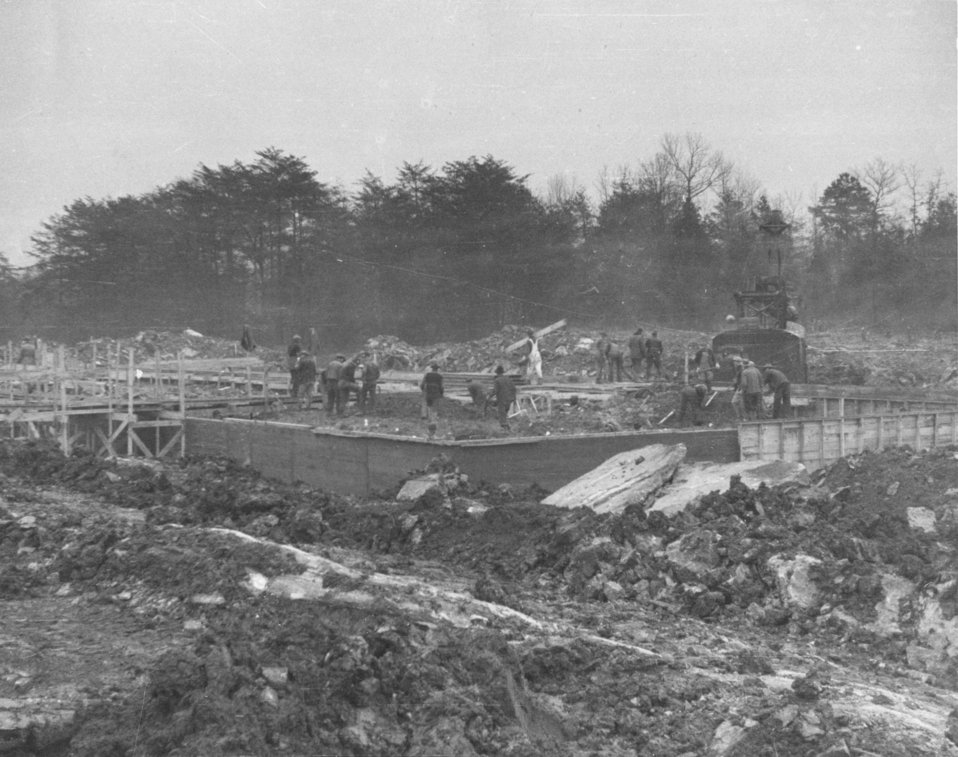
Construction activity at Oak Ridge